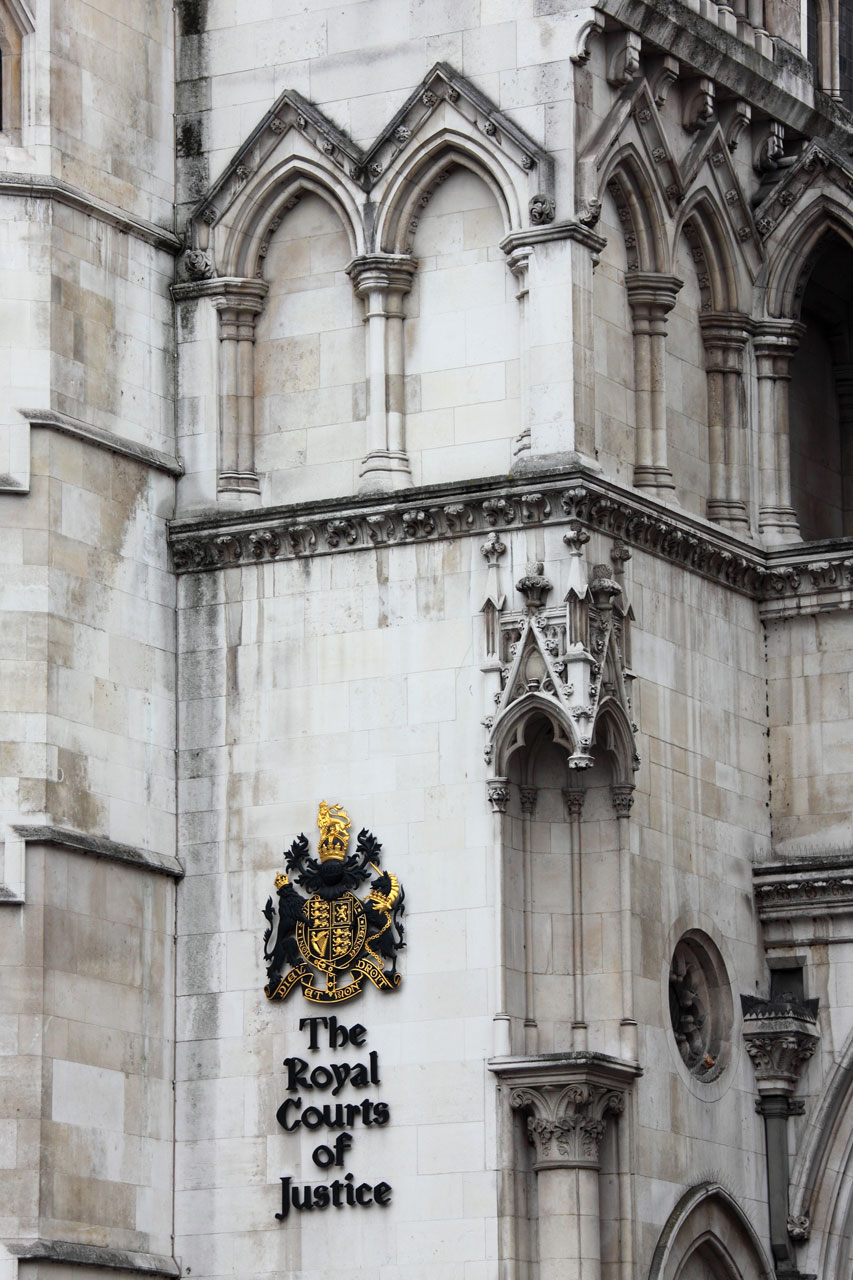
Royal courts of justice

Detail photo of the royal courts of justice in london.